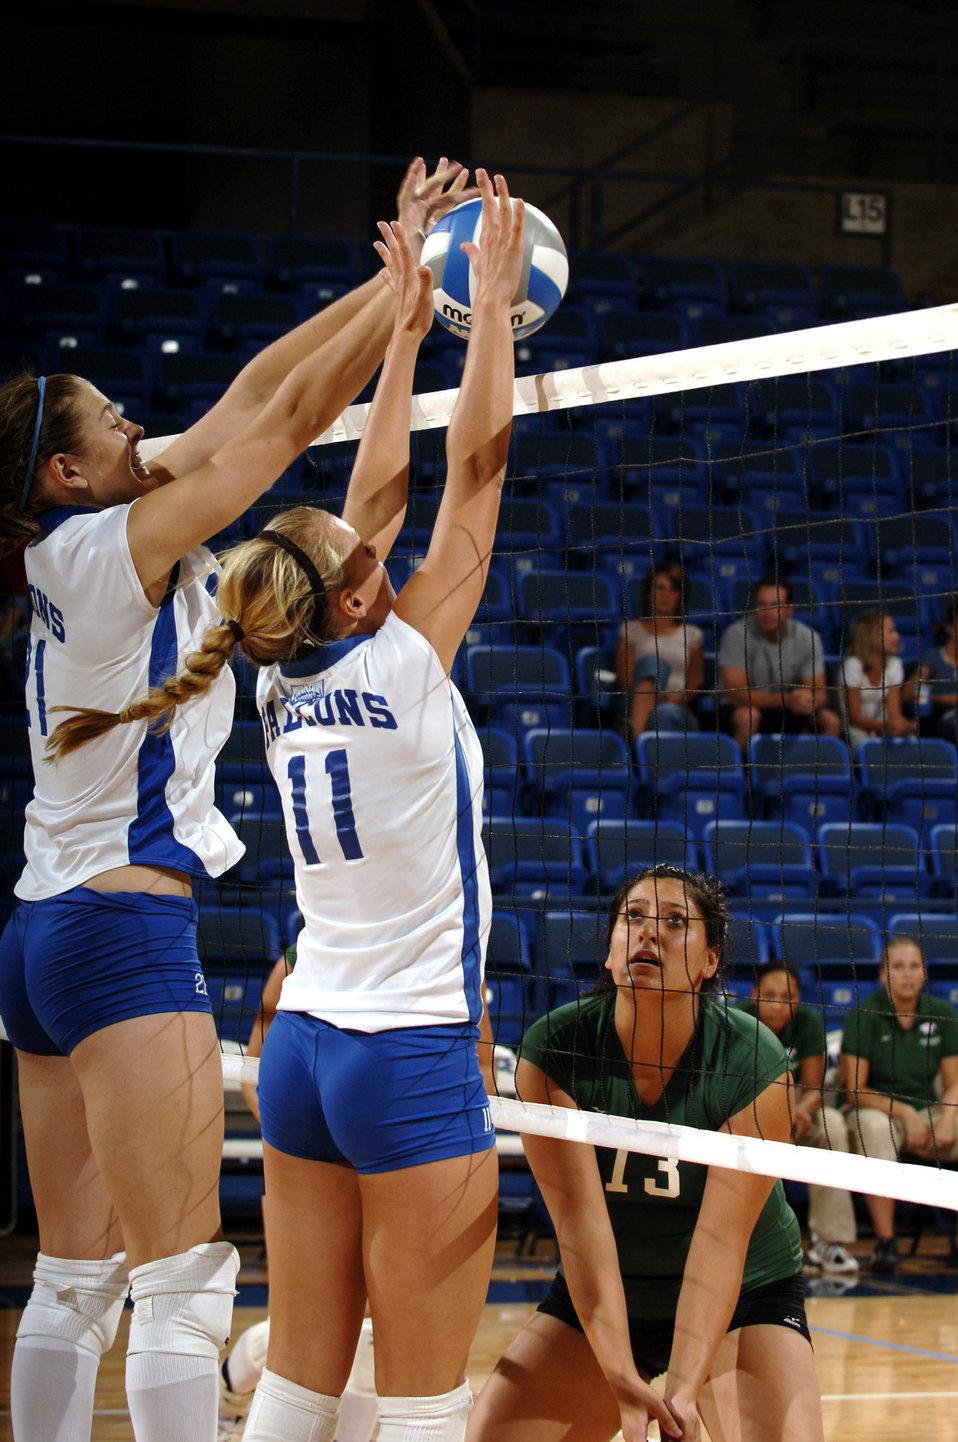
Cadets place second at volleyball invitational

U.S. Air Force Academy sophomore Michelle Harrington (left) and senior Kim Kallibis block a Chicago State spike Aug. 24 as Jessica Khouri braces for the ball at Clune Arena at the Academy in Colorado. The Falcons swept the Cougars, 3-0, en route to a second place finish in the Air Force Invitational Tournament.